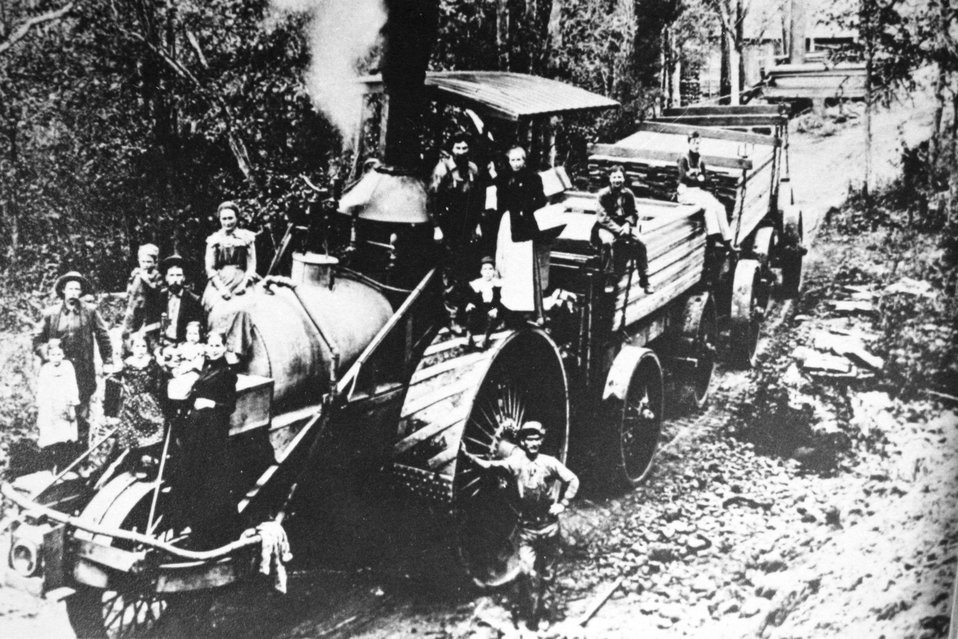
Traction engine